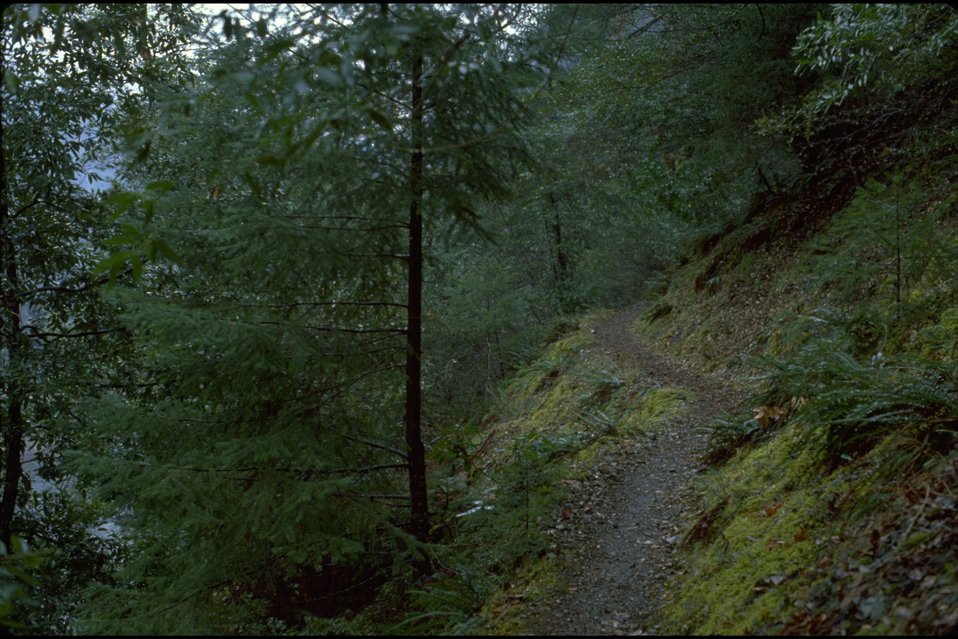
Rogue River - Trail to Rainie Falls. Trail on South side of river, wild section.